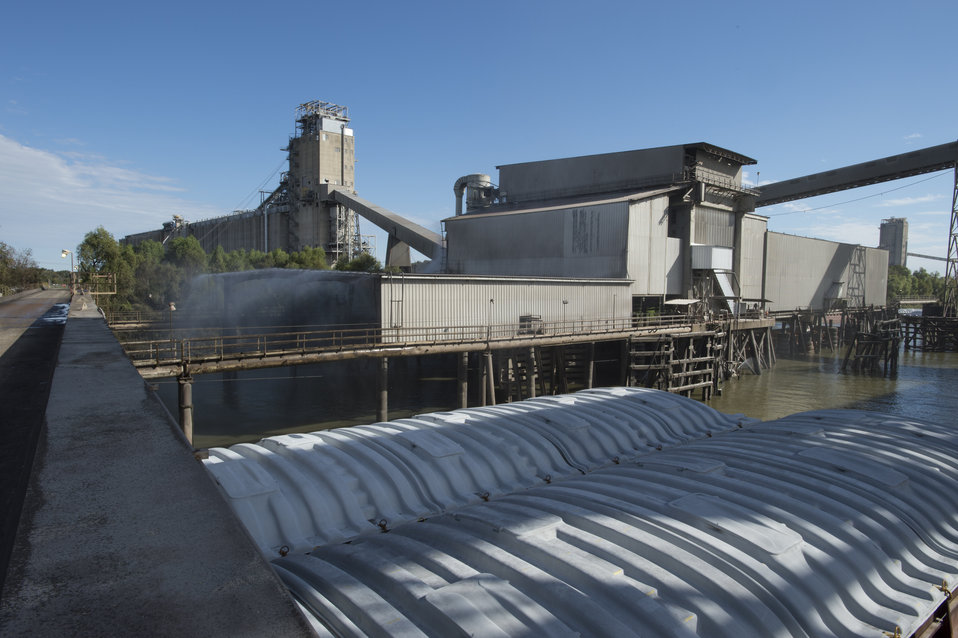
Grain barges tied up to pier near grain elevators near the Port of New Orleans in New Orleans, LA on Tuesday, Nov. 19, 2013.